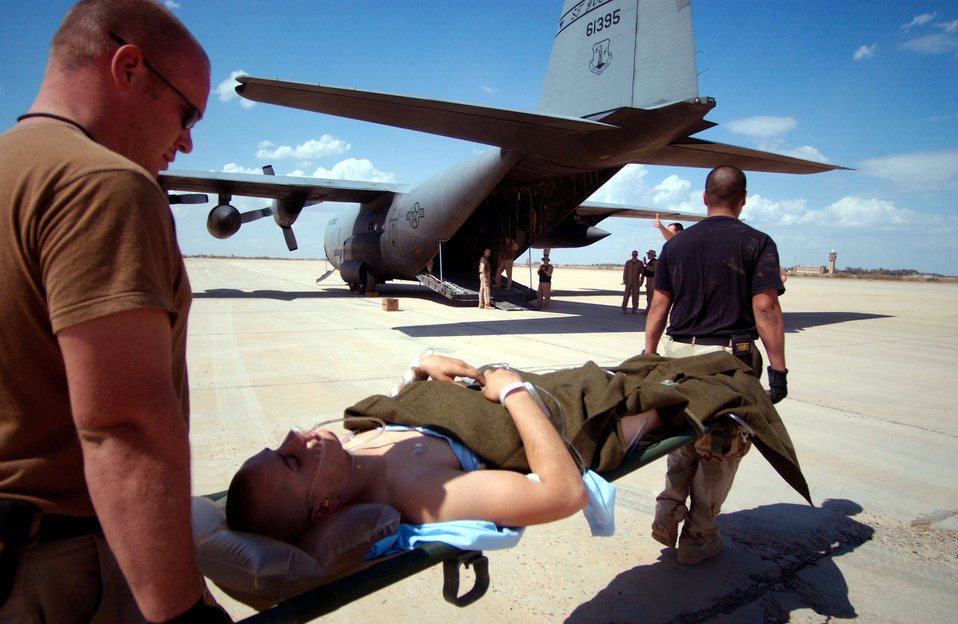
Medical evac

OPERATION IRAQI FREEDOM -- U.S. Air Force aeromedical-evacuation technicians carry Army Private 1st Class Jeffrey Wolf from the medical airlift staging facility at Baghdad International Airport to a C-130 Hercules on April 22. The 15 people who staff the MASF are responsible for getting sick and wounded people out of the combat environment and into a hospital where they can receive more extensive care. The staff medically evacuated 56 patients in its first six days through April 22.